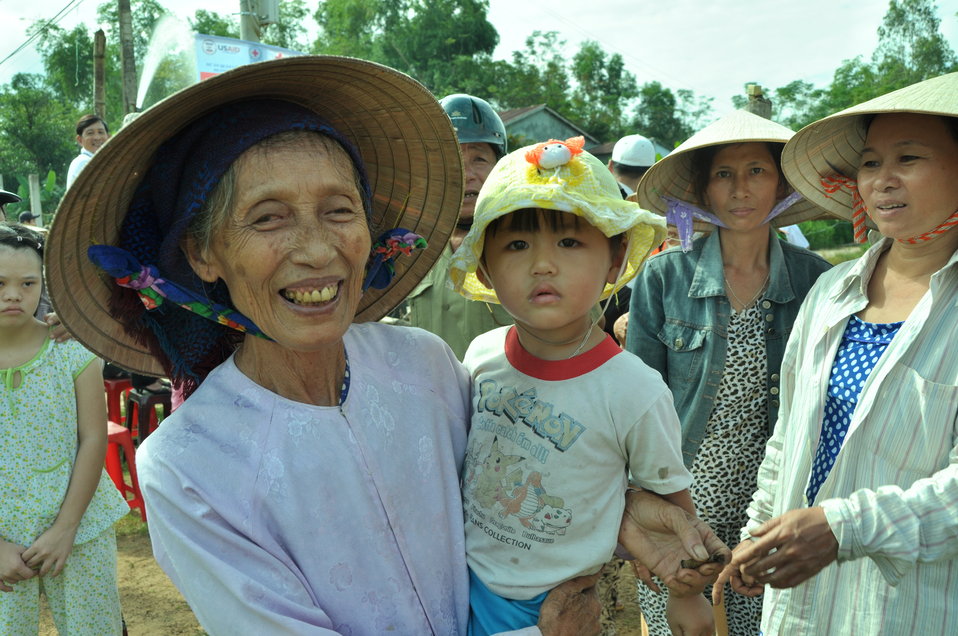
USAID, Red Cross Support Disaster Response Drill in Duy Hoa Commune, Quang Nam Province

Duy Hoa Commune, Quang Nam Province
December 5, 2012